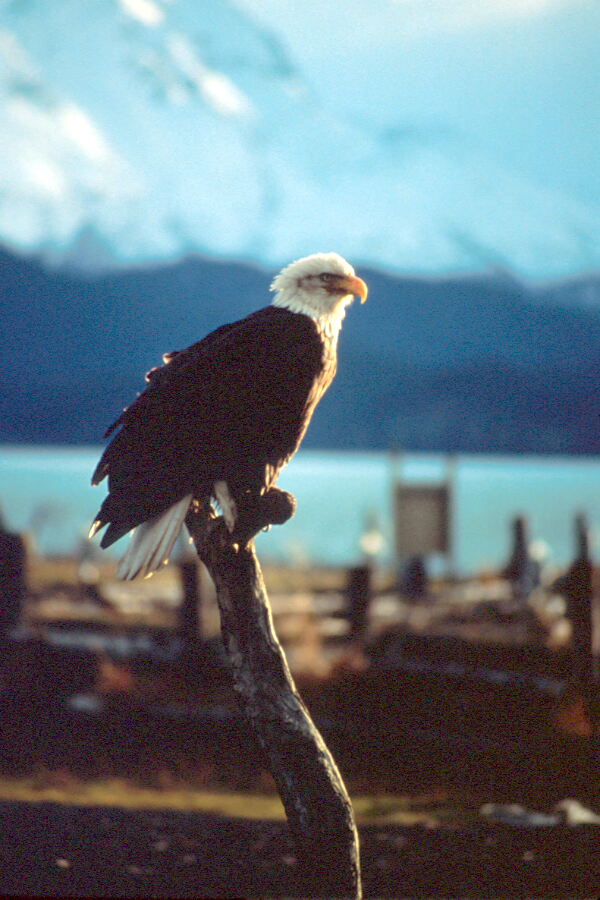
Bald Eagle.